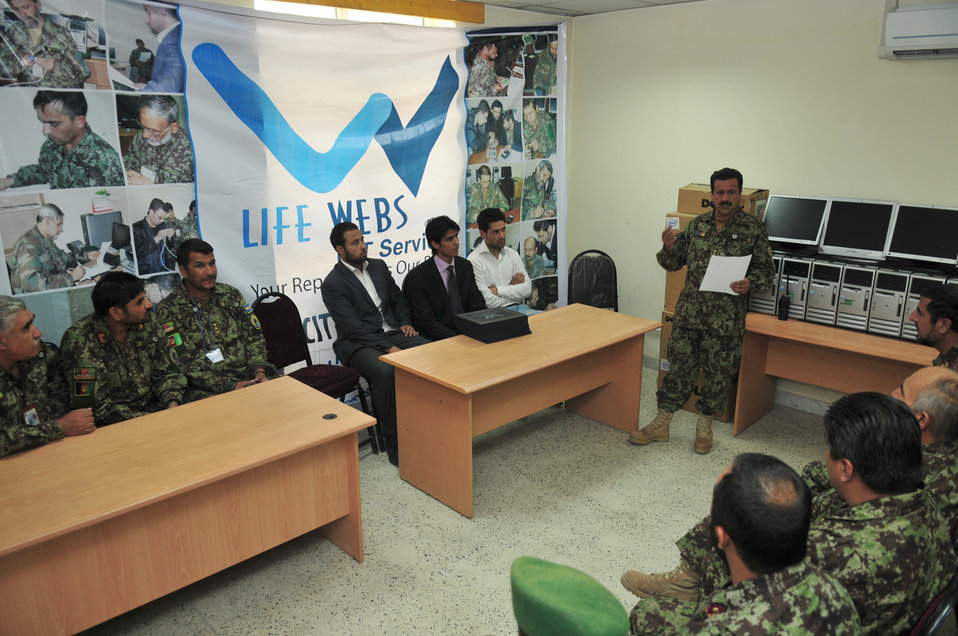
Fifteen Afghan air force members graduated from the A training course June 22, 2011, in Kabul, Afghanistan. The students are now capable of repairing desktop systems, troubleshooting, upgrading, configuring, installing and running overall basic network m

Afghan air force networking class